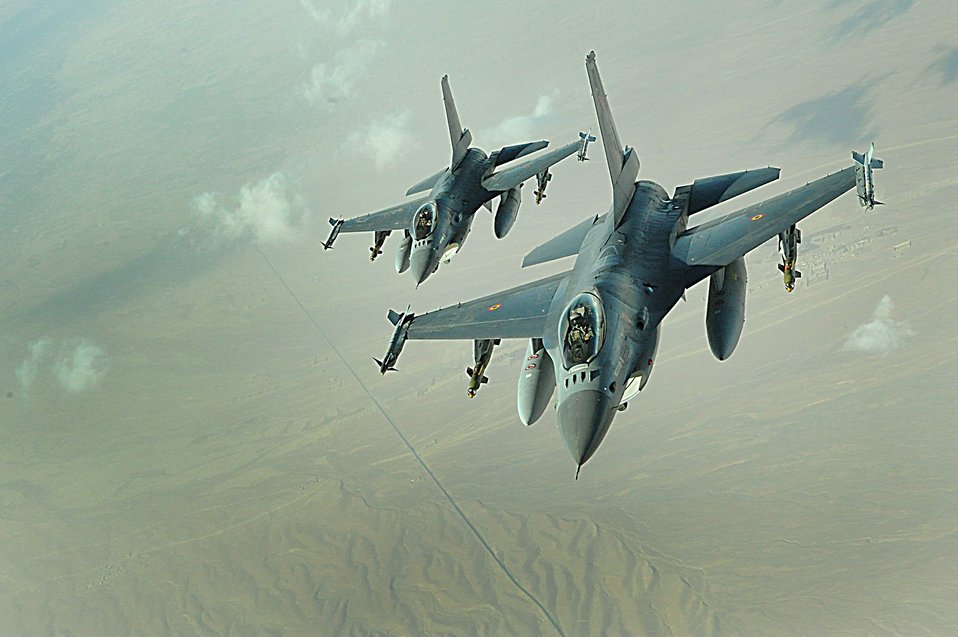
F-16s provide cover

F-16 Fighting Falcons fly over Southwest Asia. The F-16 is highly maneuverable and has proven itself in air-to-air combat and air-to-surface attack.